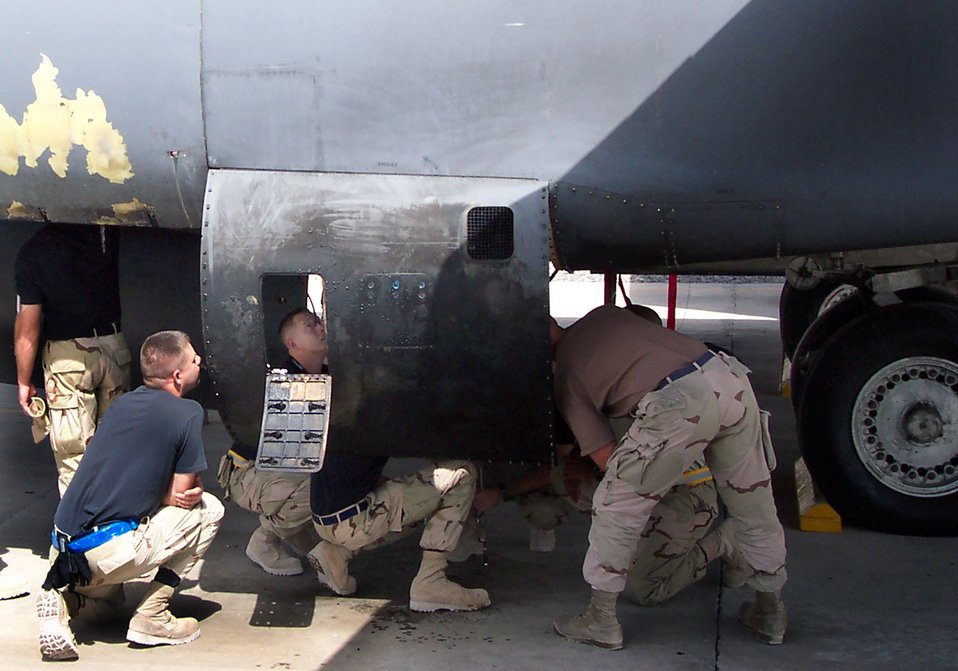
AFMC helps return damaged B-1B to friendly environment

Airmen from the 654th Combat Logistics Support Squadron examine the damaged B-1B Lancer at a forward operating location within the U.S. Central Command area of responsibility. The 654th CLSS is located at Tinker Air Force Base, Okla.